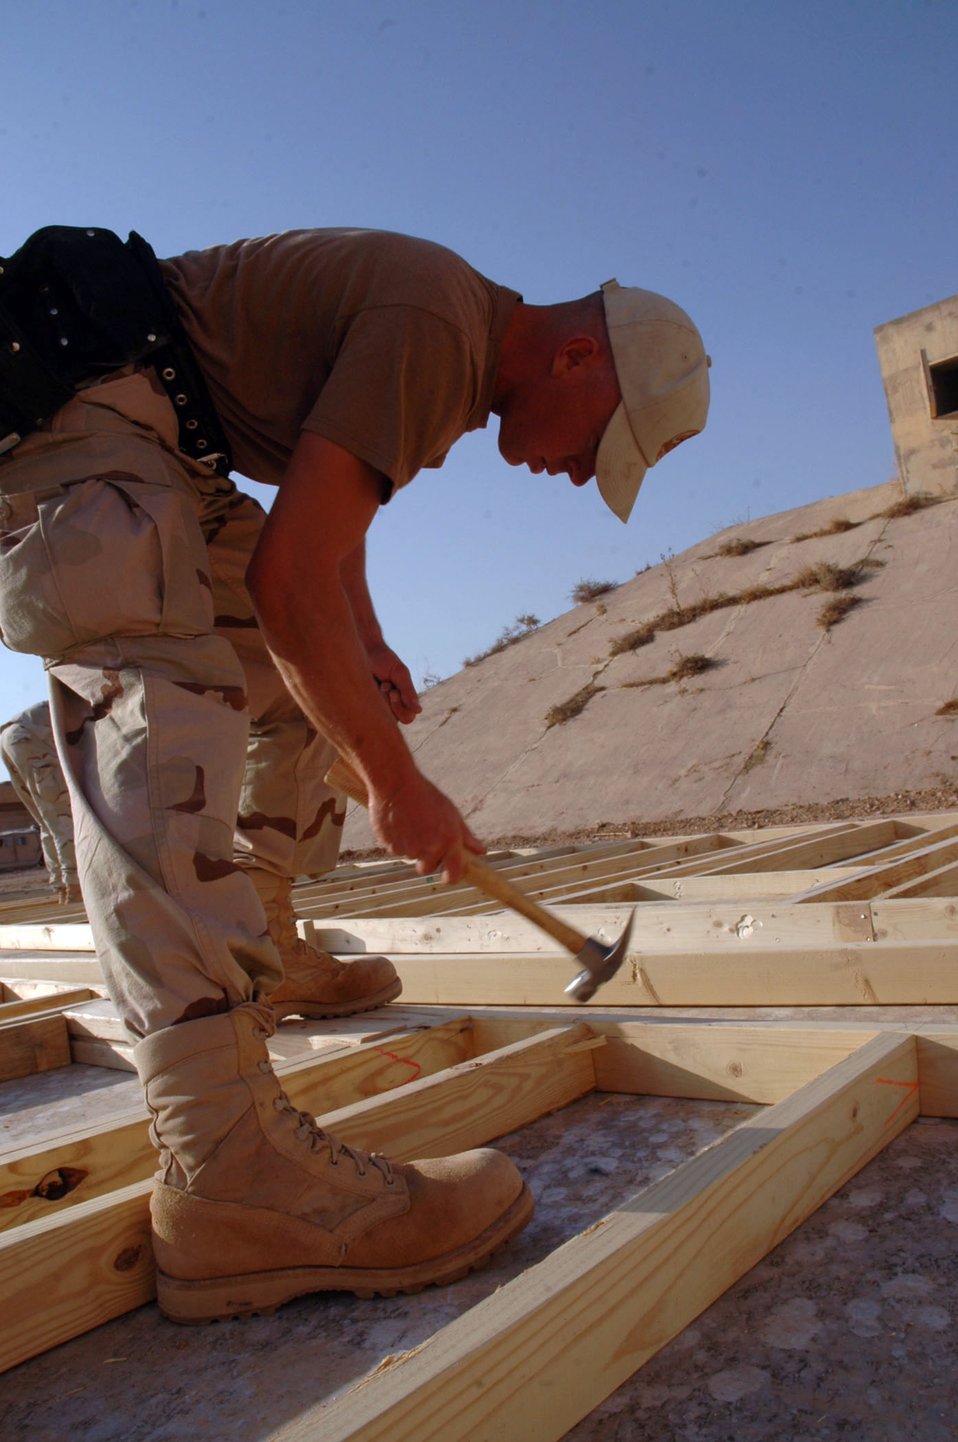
Airmen build Army post

FORWARD OPERATION BASE QAYYARAH WEST, Iraq (AFPN) -- Senior Airman Jesse Gent hammers a piece of wood into place on a new building here. Airman Gent is a structural journeyman with the 557th Expeditionary Red Horse Squadron.